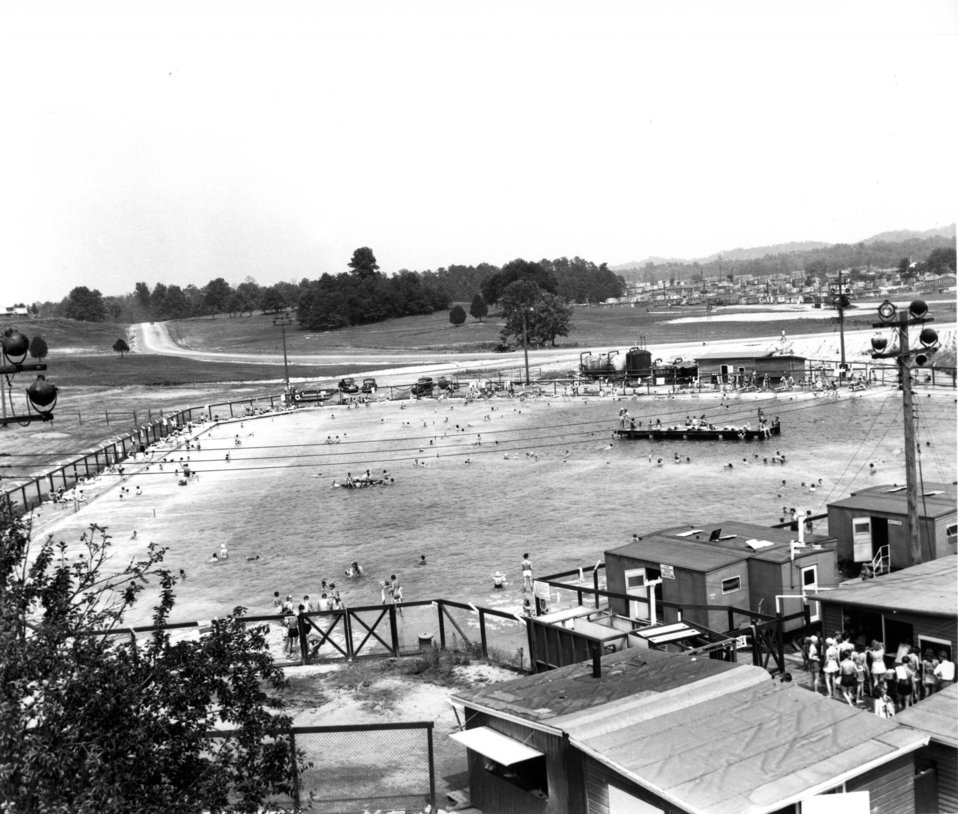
Recreation at Oak Ridge